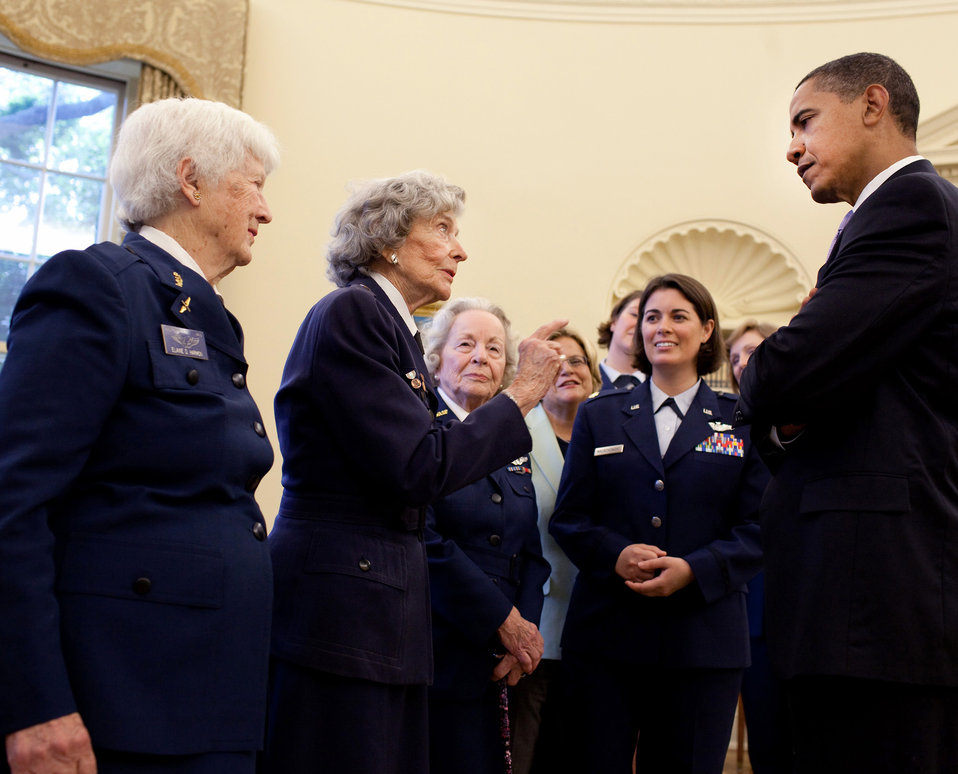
WASP awarded Congressional Gold Medal for service

President Barack Obama chats with WASP pilots Elaine Harmon (left) and Lorraine Rodgers in the Oval Office after signing S.614, a bill to award a Congressional Gold Medal to Women Airforce Service Pilots July 1 at the White House. The WASP program was established during World War II, and from 1942 to 1943, more than 1,000 women joined, flying 60 million miles of noncombat military missions. Of the women who received their wings as Women Airforce Service Pilots, approximately 300 are living today.